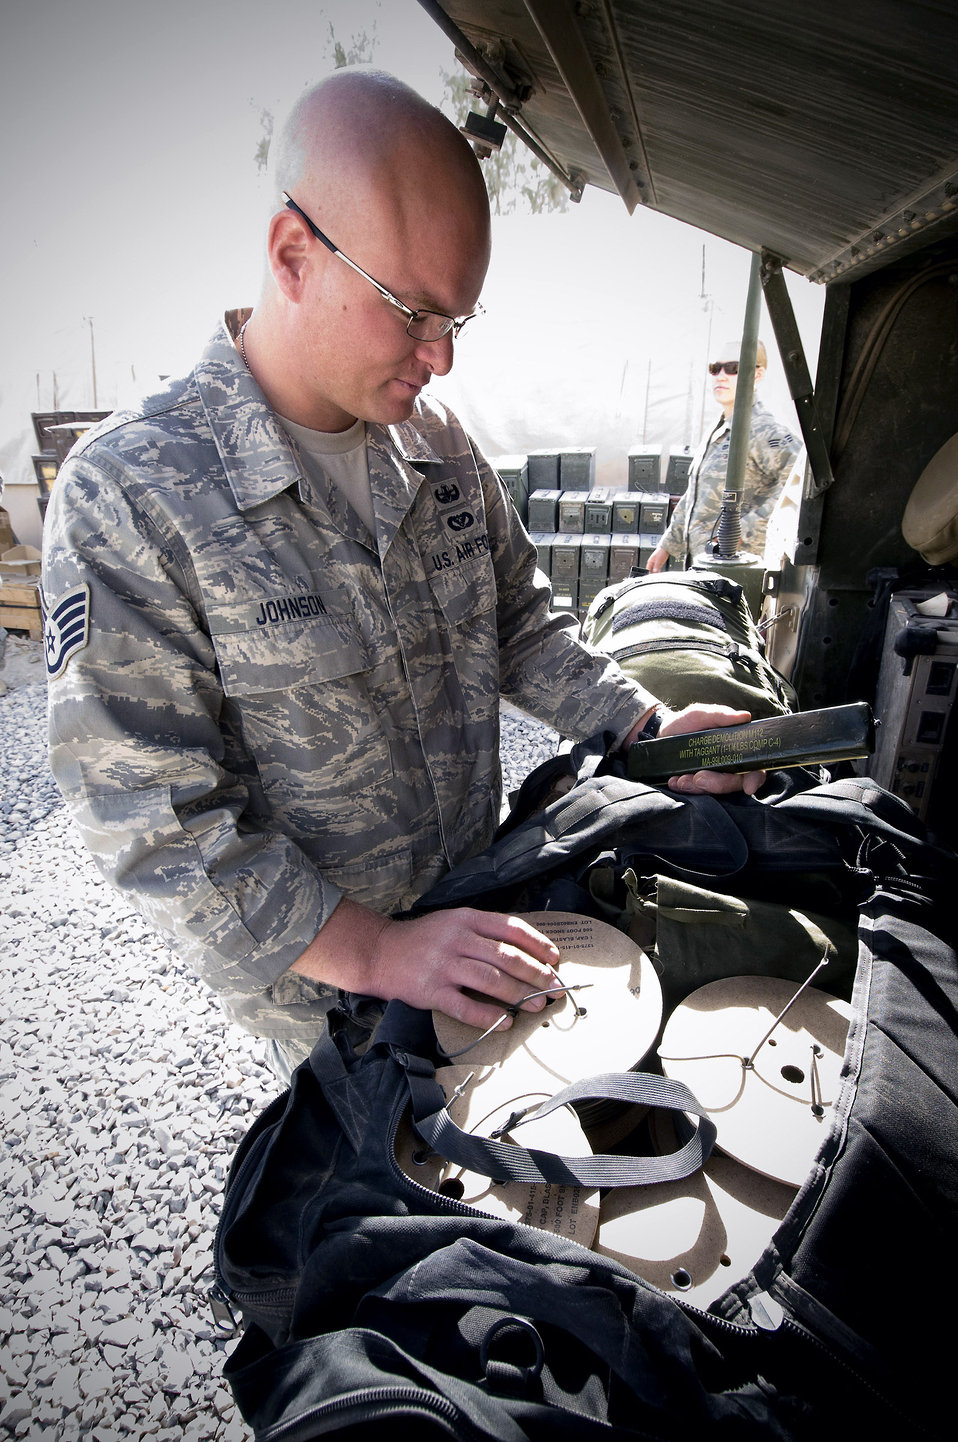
Airmen combat explosive threats in Afghanistan

Staff Sgt. Tyson Johnson inventories a backpack containing materials for detonating explosives Oct. 26 at Kandahar Airfield, Afghanistan. Explosive ordnance disposal teams keep everything needed to handle just about any incident ready to go so they can respond in a moment's notice. Sergeant Johnson is assigned to the 755th Air Expeditionary Group Explosive Ordnance Disposal Operation Location-Bravo and deployed from Peterson Air Force Base, Colo. He hails from Salt Lake City.